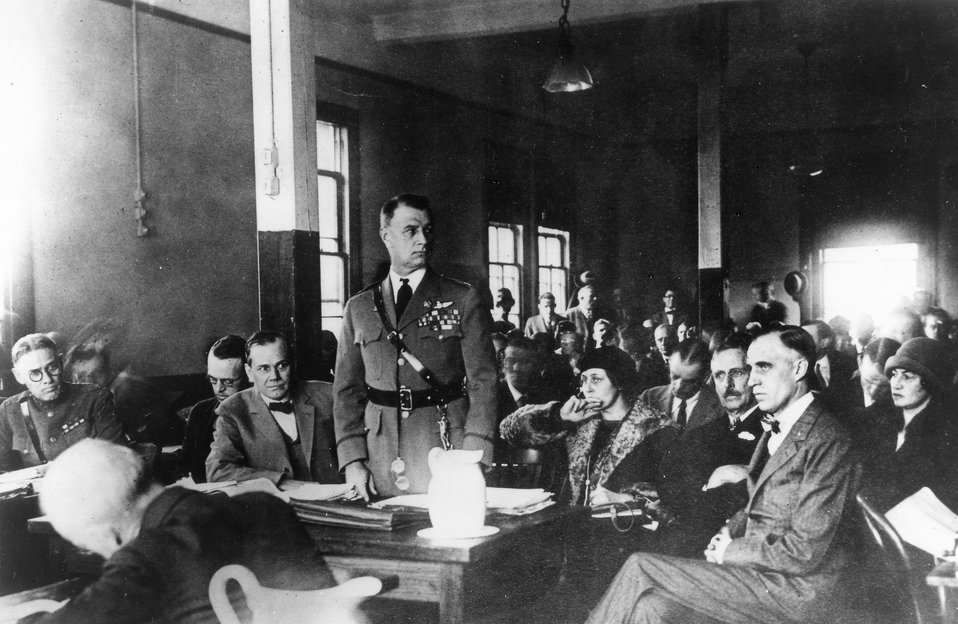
Billy Mitchell's court-martial

A scene taken from Brig. Gen. William